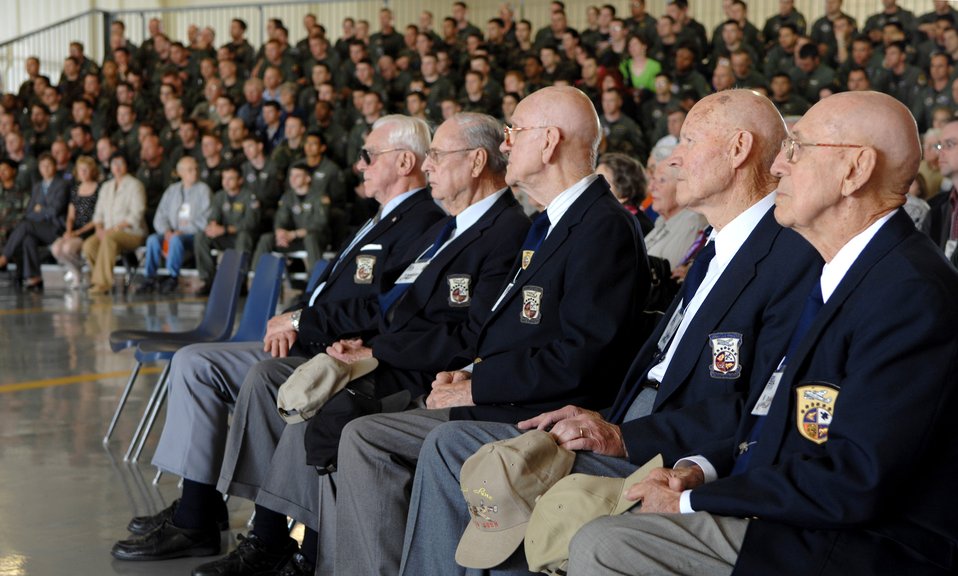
Doolittle Raiders 65th anniversary kicks off

Doolittle Raiders (second from left to right) Robert Hite, Tom Griffin, Dave Thatcher and Dick Cole listen during a ceremony honoring the raiders and celebrating the 65th anniversary of the raid April 17 at Randolph Air Force Base, Texas.